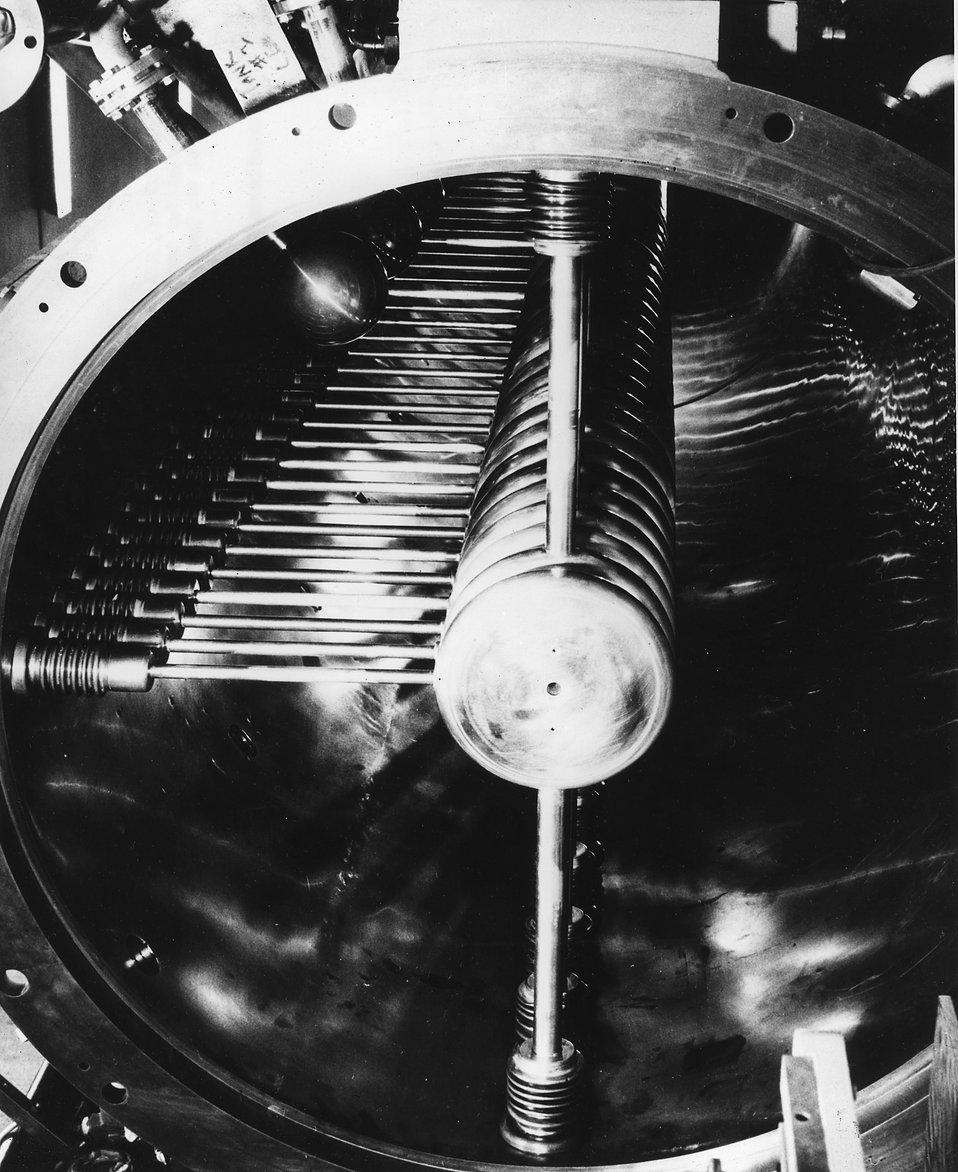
Linear Accelerator tank (37.4 inches inside diameter). c. 1961